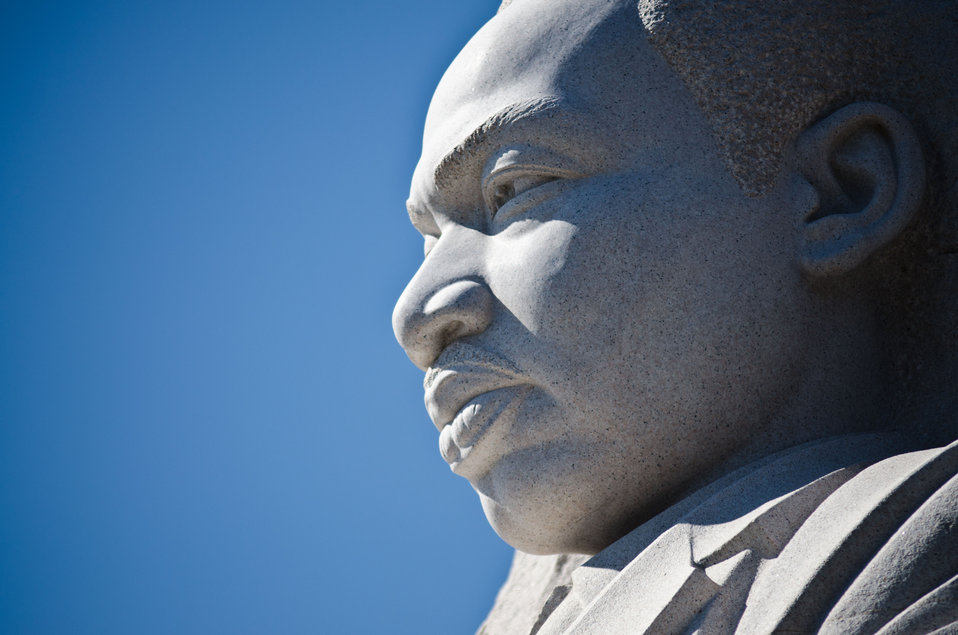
Martin Luther King, Jr. Memorial in Washington, DC, on Saturday, October 8, 2011.